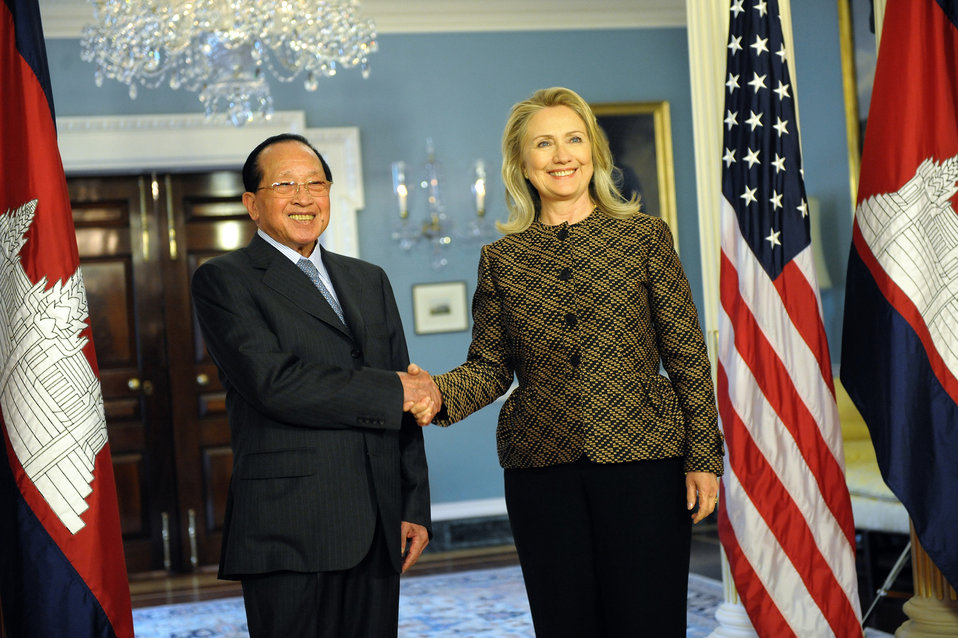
Secretary Clinton Meets With Deputy Prime Minister Namhong of Cambodia

U.S. Secretary of State Hillary Rodham Clinton meets with Deputy Prime Minister and Foreign Minister Hor Namhong of Cambodia at the Department of State in Washington, D.C. on June 12, 2012.